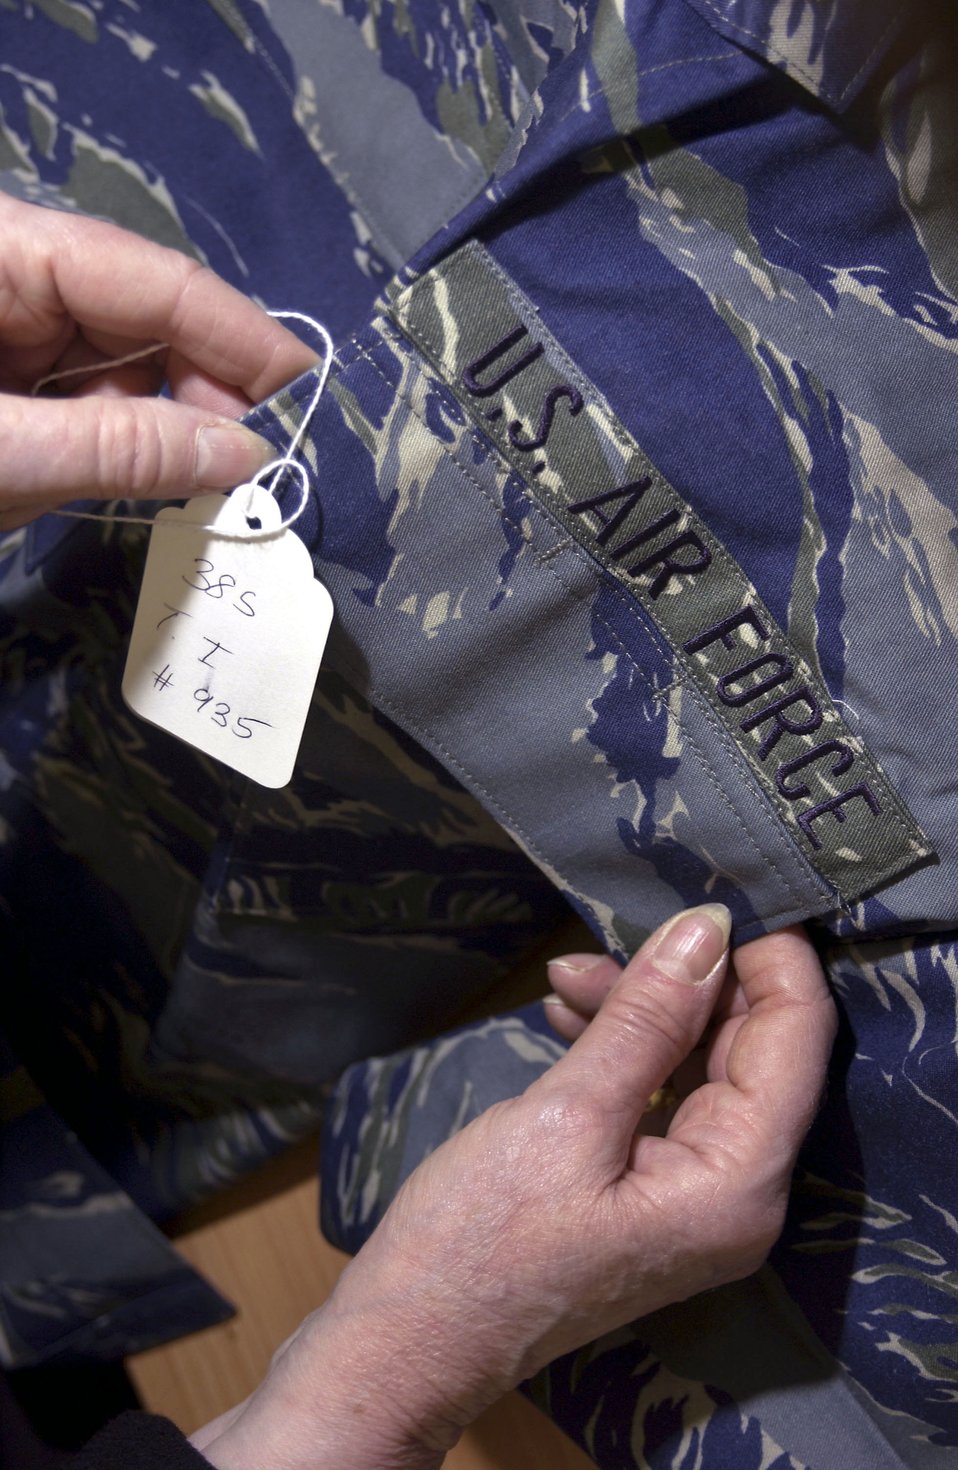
This is a test

RAMSTEIN AIR BASE, Germany -- A possible replacement for the current battle dress uniform is being tested here. Air Force Uniform Board officials said the test uniform is designed to be easier to maintain and will not require professional laundering, ironing and starching. Testing usually lasts six months to one year but can be extended based upon feedback from testers.